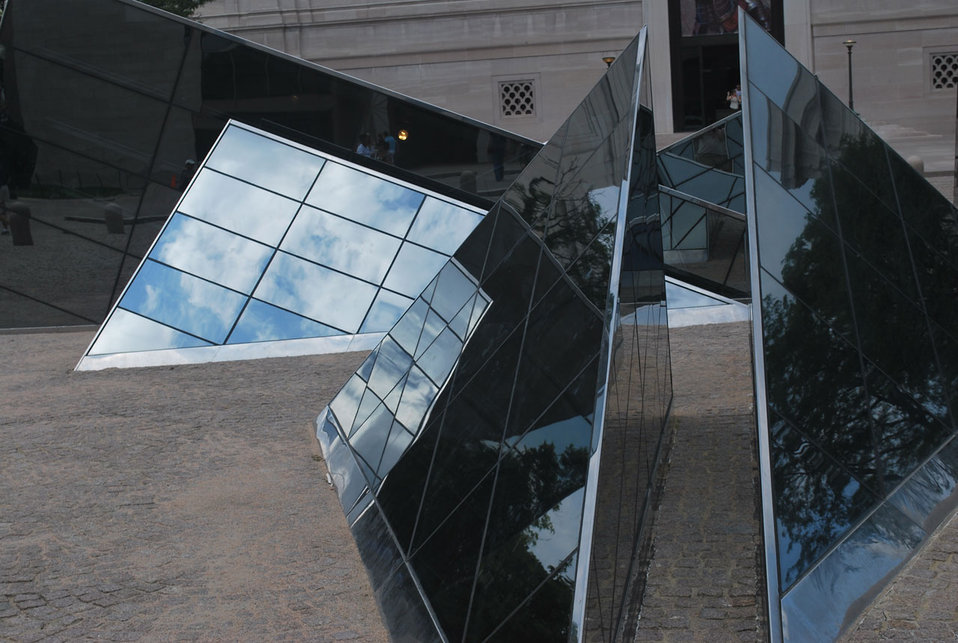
Modern art sculpture.